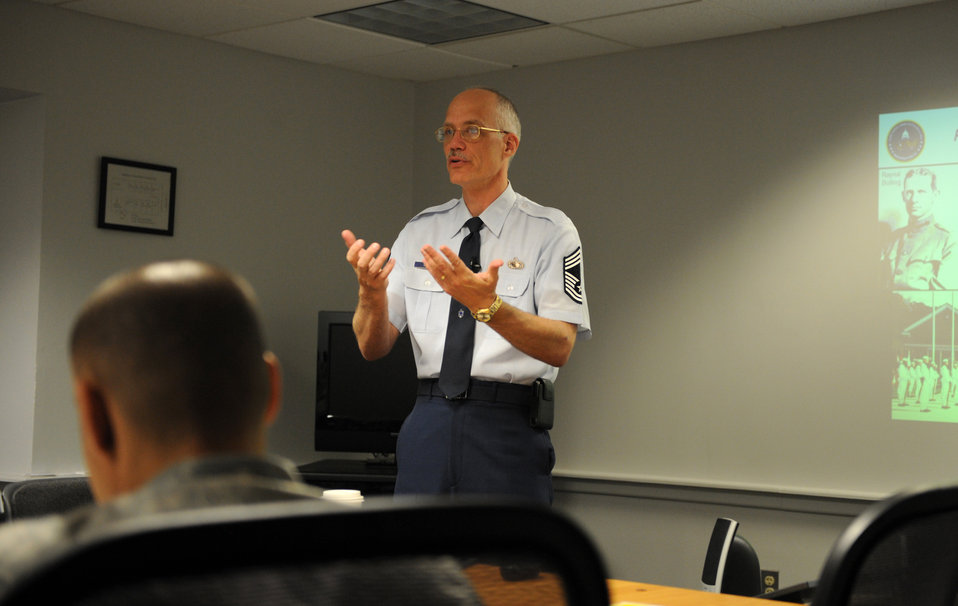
Chief discusses PTSD issues

Chief Master Sgt. Richard Simonsen works as the senior enlisted leader at Joint Base Anacostia- Bolling in Washington D.C. Simonsen speaks to Airmen about his daily struggle with Post Traumatic Stress Disorder (PTSD) and how to seek help.